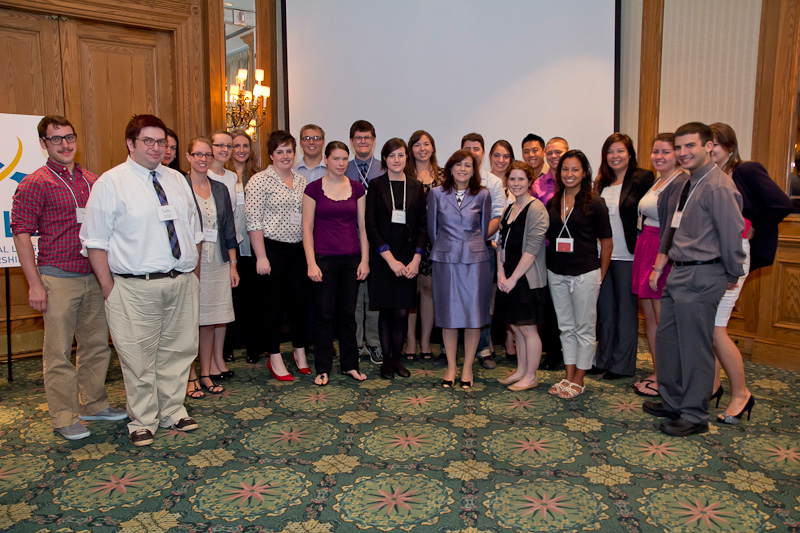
Under Secretary Sonenshine With Critical Language Scholarship Students (Turkish)

Under Secretary of State for Public Diplomacy and Public Affairs Tara Sonenshine speaks with Critical Language Scholarship (CLS) students studying Turkish at a conference in Washington, D.C., June 20, 2012.